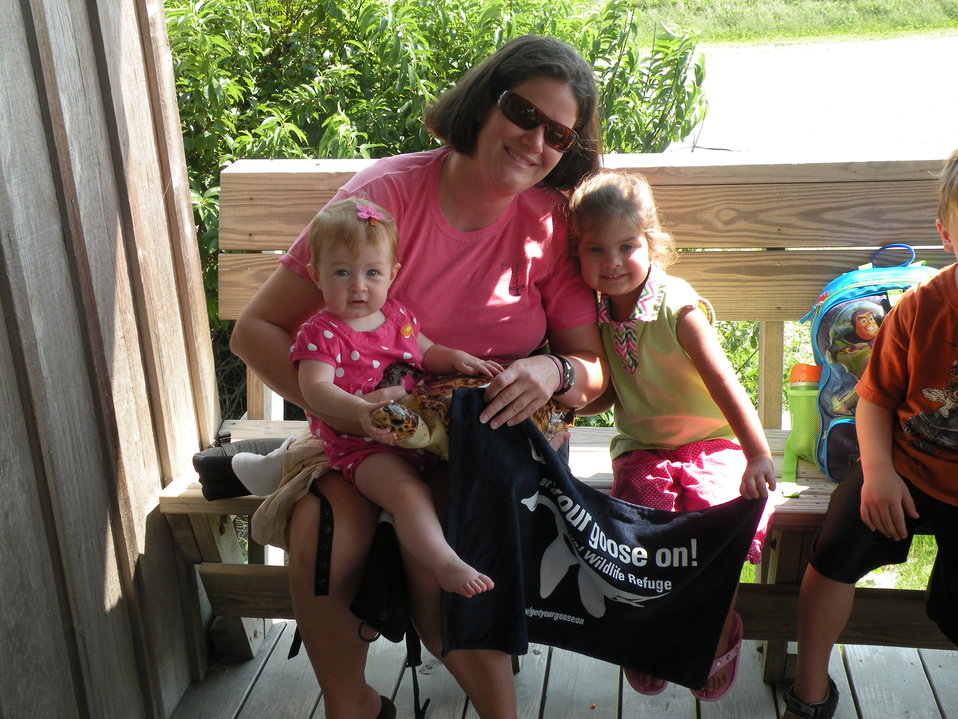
Get Your Goose On!

Outer Banks Mommy and Me group enjoy learning about turtles and Get there Goose on!

Cindy Heffley/USFWS